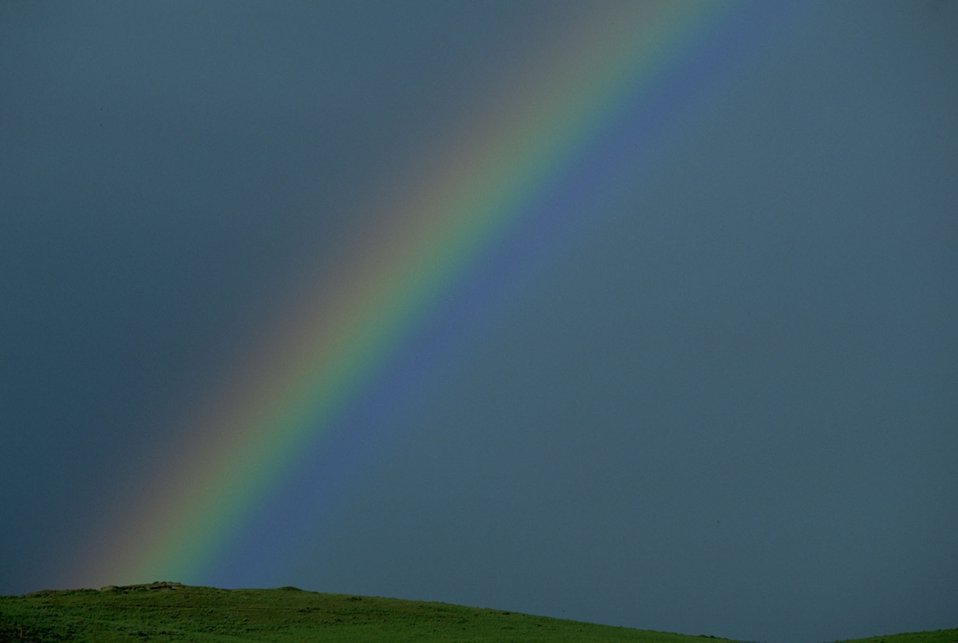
Rainbow